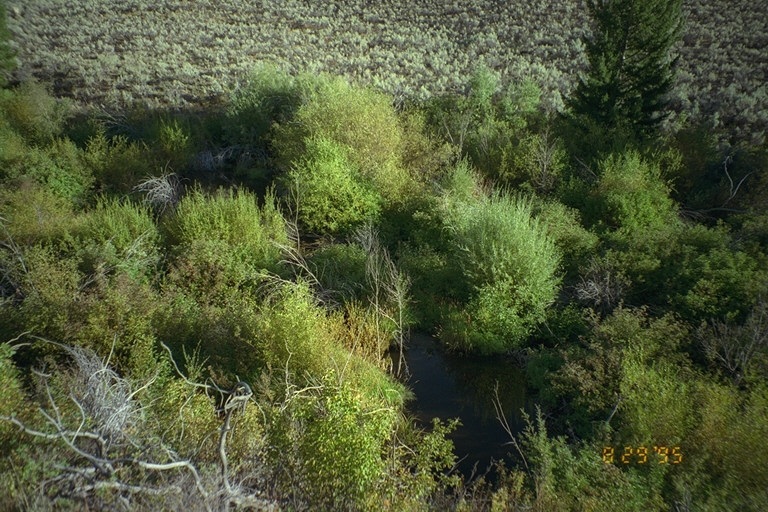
Riparian area Public Lands Salmon Field Office UCSC Upper Columbia Salmon Clearwater District